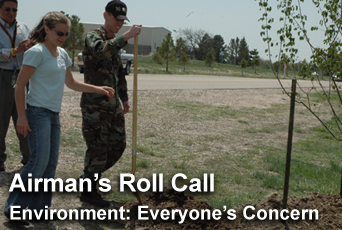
Airman's Roll Call

Evironment is everyone's concern.